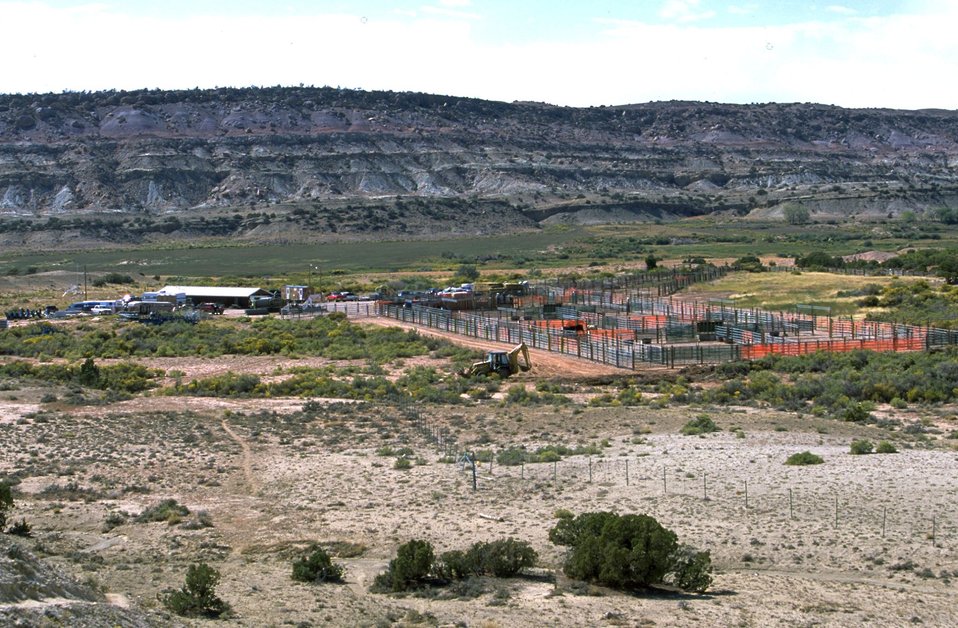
Britton Spring wild horse holding corrals